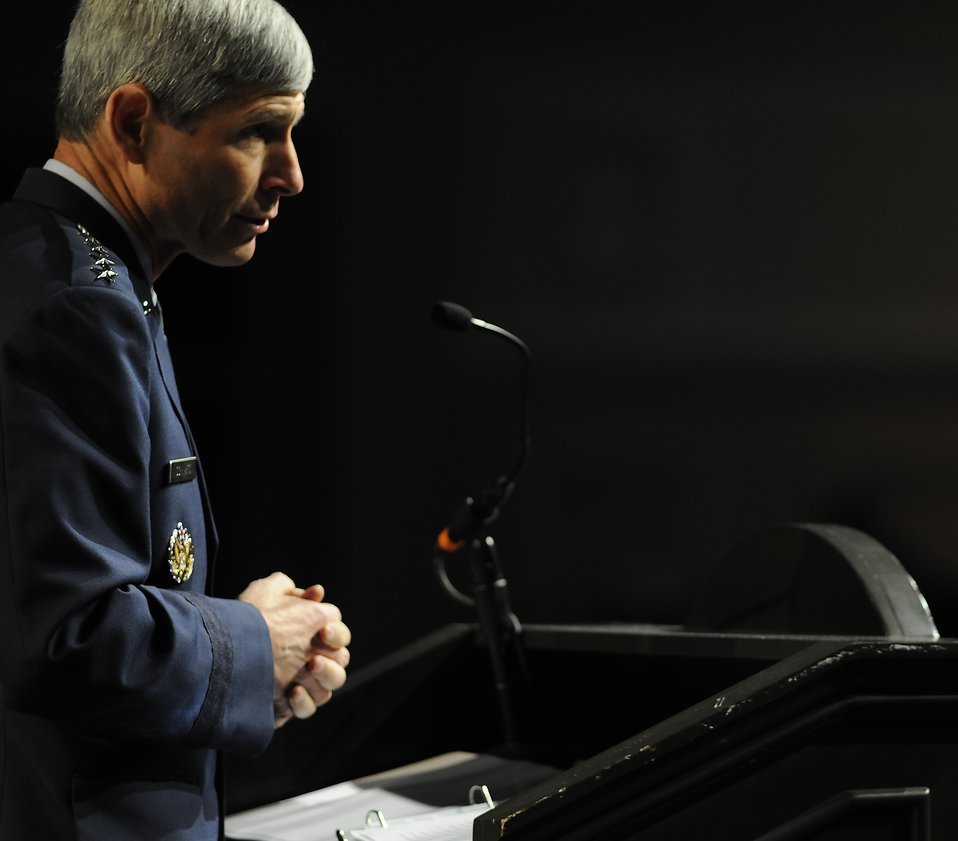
AFA

Air Force Chief of Staff Gen. Norton Schwartz delivers his keynote speech during the Air Force Association Air and Space Conference and Technology Exposition Sept. 15, 2009, at Oxon Hill, Md.